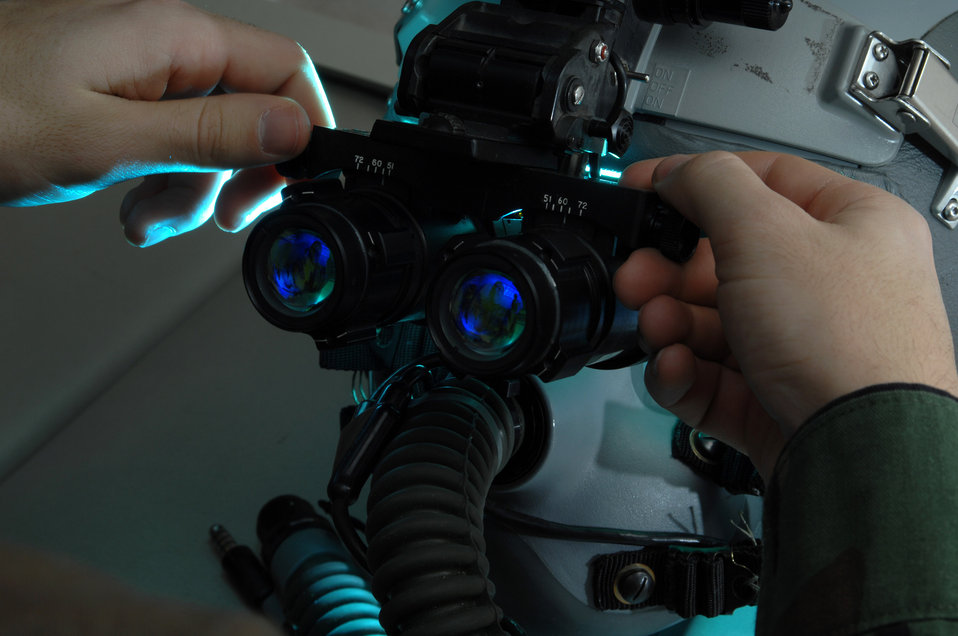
Seeing in the dark

Airman 1st Class Andrew Witherspoon adjusts the eyespan on a pair of AS/AVS-9 Night Vision Goggles in the life support section of the 355th Fighter Squadron Nov. 29 at Eielson Air Force Base, Alaska. During the winter months, pilots at Eielson AFB are given a greater opportunity to train with NVG's more than their counterparts in the lower 48 states due to the decreased length of sunlight.